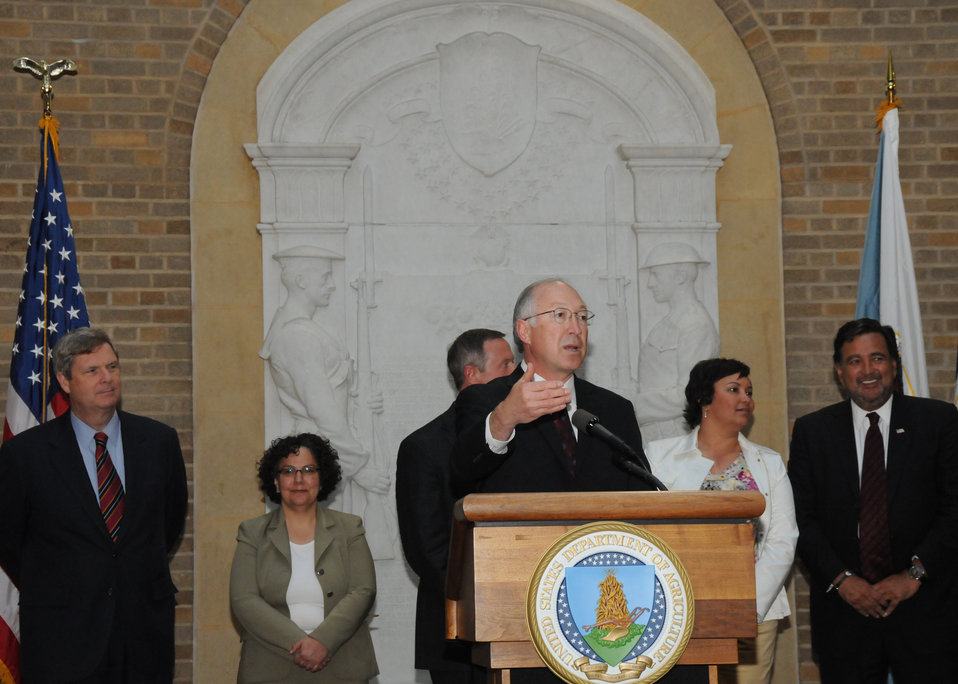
Interior Secretary Ken Salazar makes remarks at the White House Conference on America’s Great Outdoors reception held at the Department of Agriculture on Thursday, April 15, 2010 . (L to R in background Agriculture Secretary Tom Vilsack, Council on Environmental Quality Chair Nancy Sutley, Maryland Governor Martin O’Malley, Environmental Protection Agency Administrator Lisa Jackson, and New Mexico Governor Bill Richardson ) USDA photo 10di1315-89